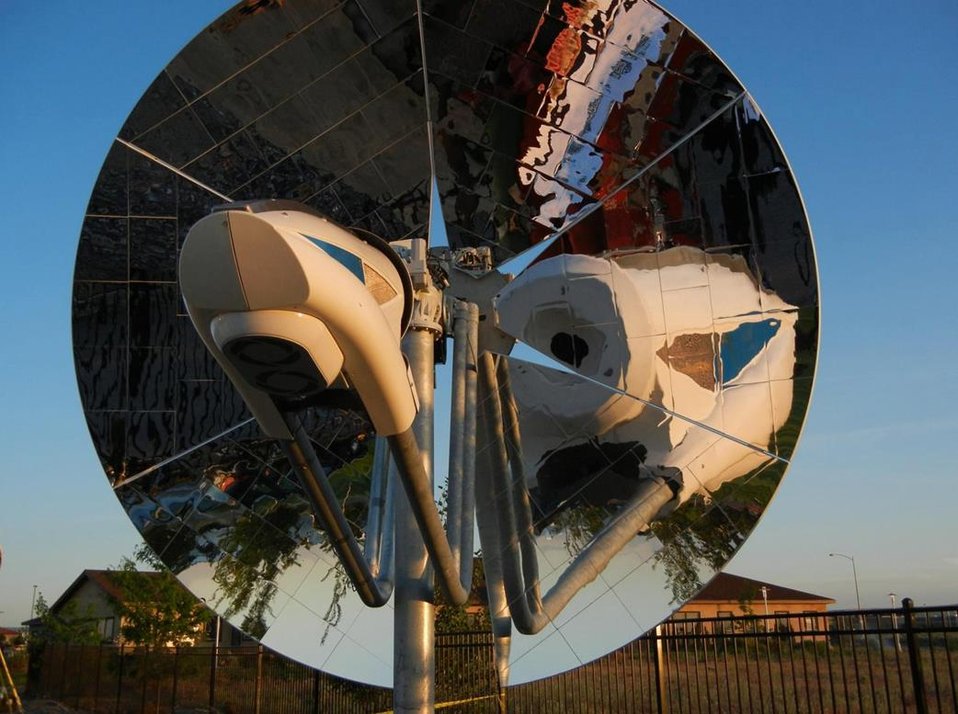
Photo of the Week: Boosting Solar Technology

Concentrated solar panels are getting a power boost. This summer, Pacific Northwest National Laboratory (PNNL) will be testing a new concentrated solar power system -- one that can help natural gas power plants reduce their fuel usage by up to 20 percent.

PNNL has developed a system that uses a thermochemical conversion device to convert natural gas and sunlight into a more energy-rich fuel called syngas. By installing the pictured device in front of a concentrating solar power dish, power plants can burn less fuel.